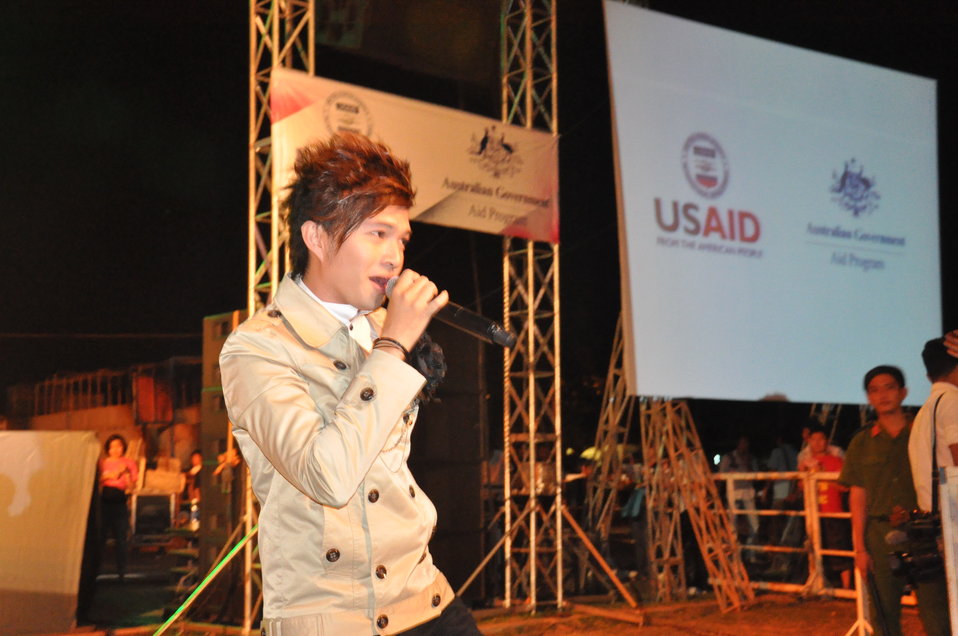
USAID and MTVEXIT concert in Can Tho

Concert in Can Tho against human trafficking, April 10, 2010